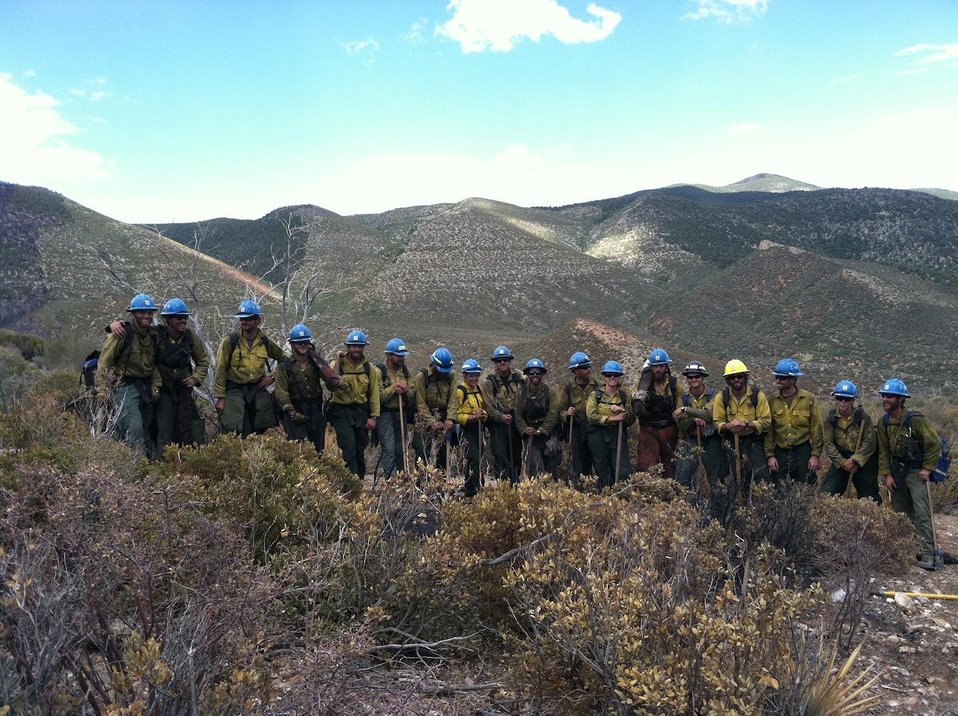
Payette National Forest, McCall, ID Payette regular firefighters stand along the Lovell Canyon Trail at the Carpenter Fire. The Carpenter Fire in the Toiyabe National Forest near Humboldt, NV was caused by a lightning strike on Jul. 1, 2013. The fire has consumed nearly 27,881acres and is presently 95% contained.